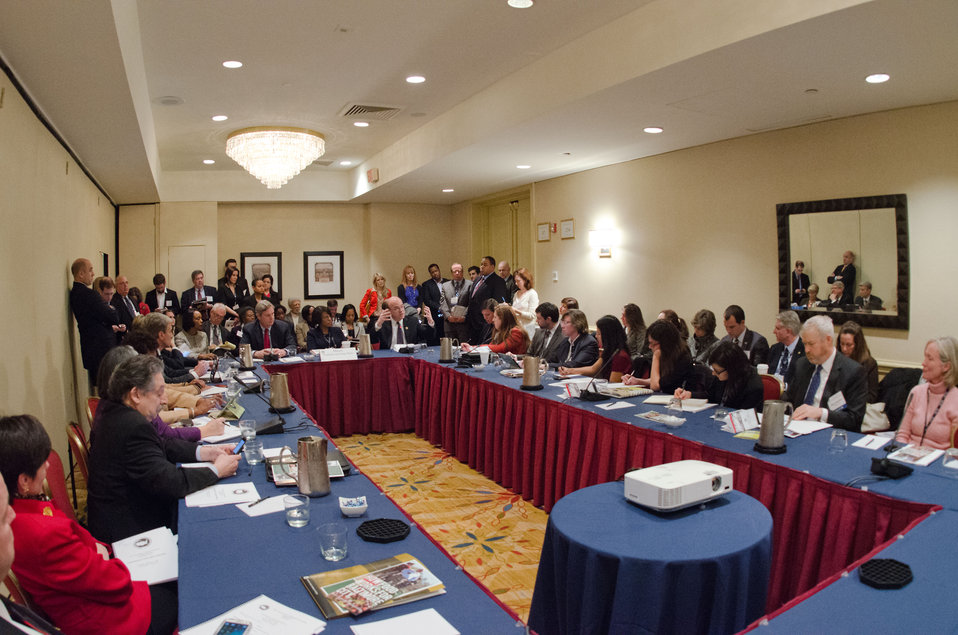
U.S. Representative Jim McGovern addresses the Food Policy session of the United States Conference of Mayors 81st Winter Meeting, in Washington D.C., on Thursday, Jan 17, 2013. He talks about pursuing multiple solutions to food issues in American cities and addressing the political aspect of ending hunger in cities.